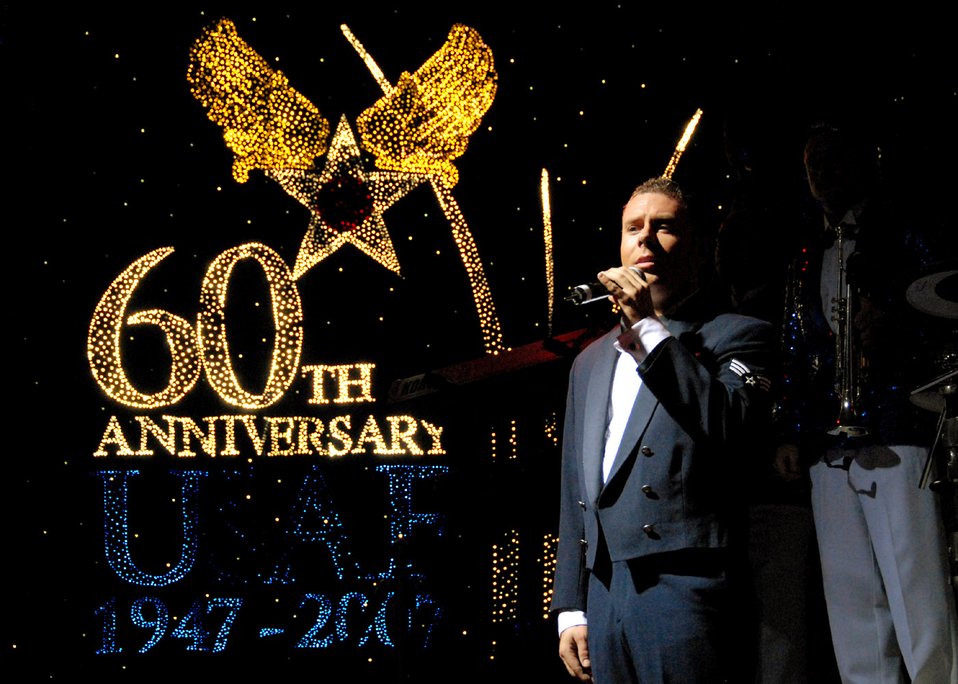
Tops In Blue performs at Osan

Senior Airman Nicholas Amari performs during Tops In Blue's annual world tour celebrating